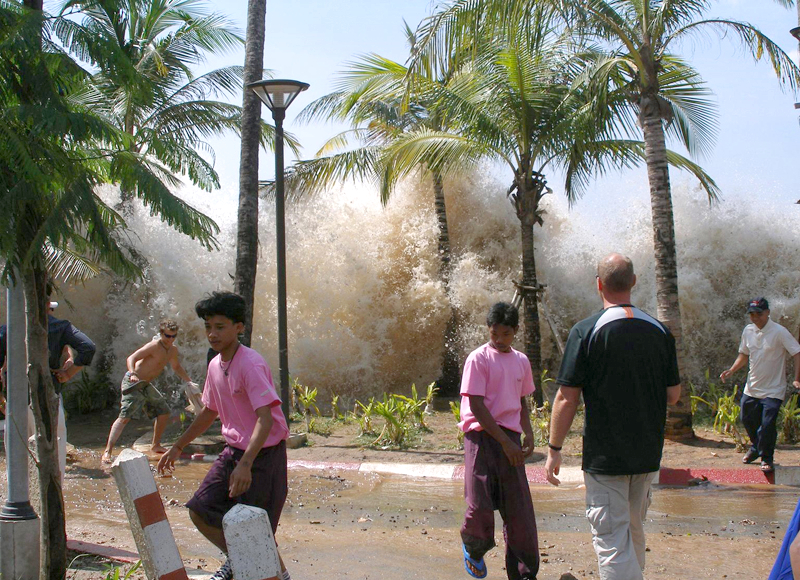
A picture of the 2004 tsunami in Ao Nang, Thailand. Fran√ßais†: Image montrant le raz-de-mar√©e de 2004 √† Ao Nang, en Tha√Ølande. Italiano: Una fotografia del maremoto dell'Oceano Indiano ad Ao Nang, in Tailandia. Espa√±ol: Imagen del terremoto del Oc√©ano √çndico de 2004 en Ao Nang, Tailandia.